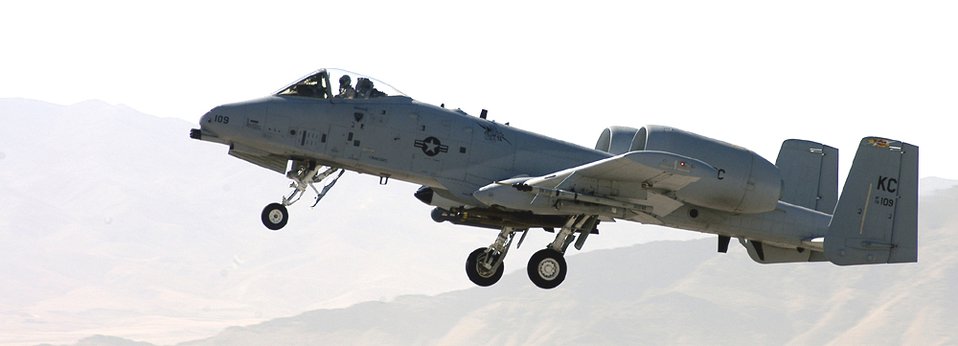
July 16 airpower summary: A-10s conduct shows of force

An A-10 pilot takes off in an A-10 Thunderbolt II in support of Operation Enduring Freedom in Afghanistan.